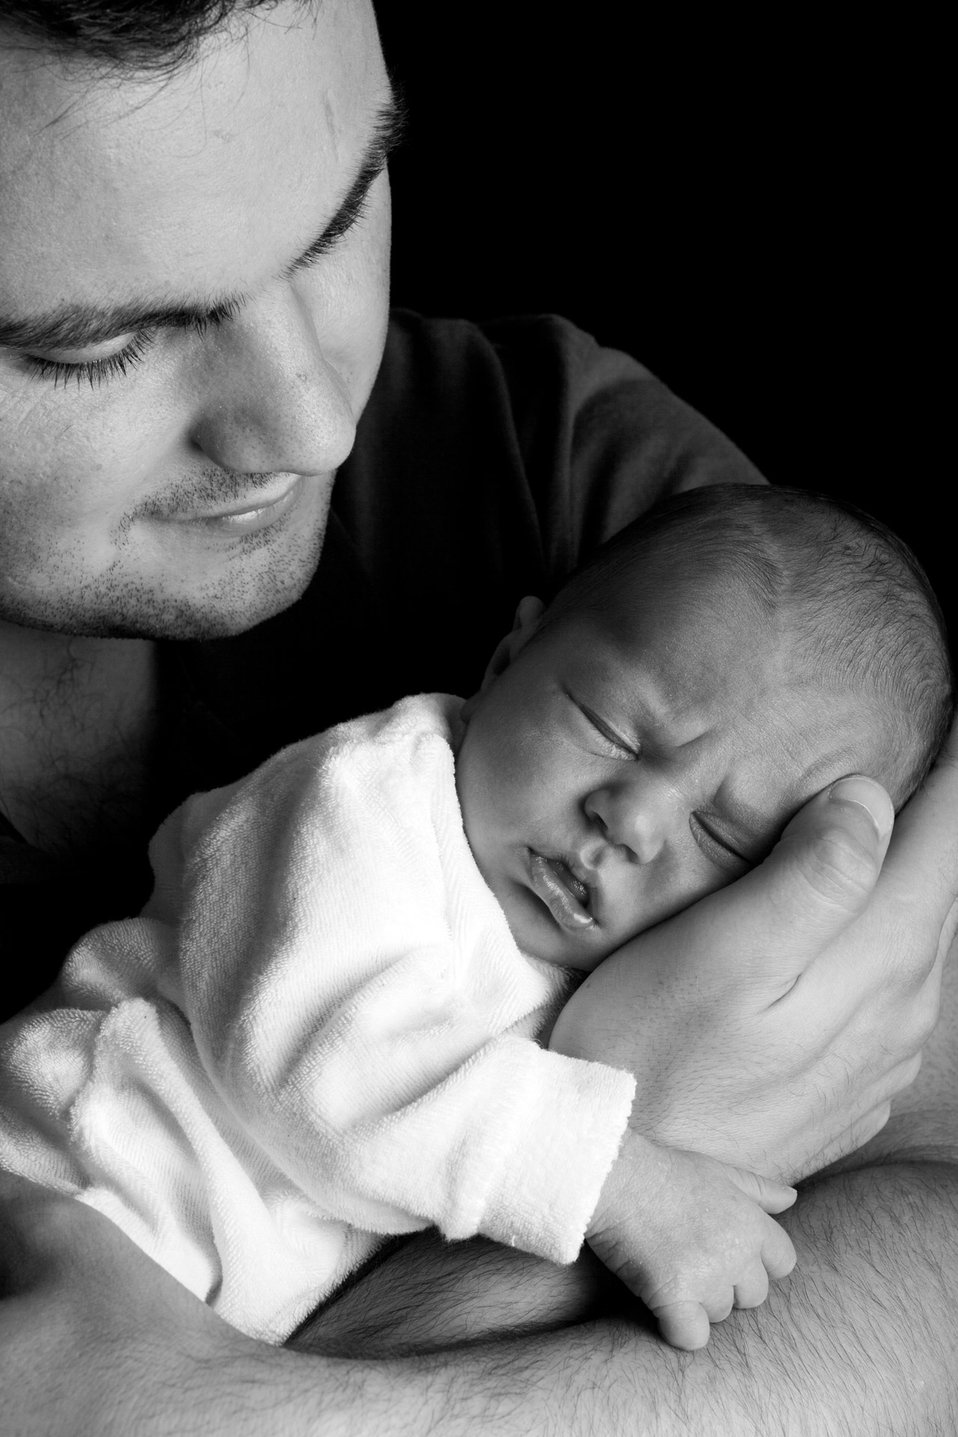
Holding a newborn

Daddy holding a newborn in black and white.